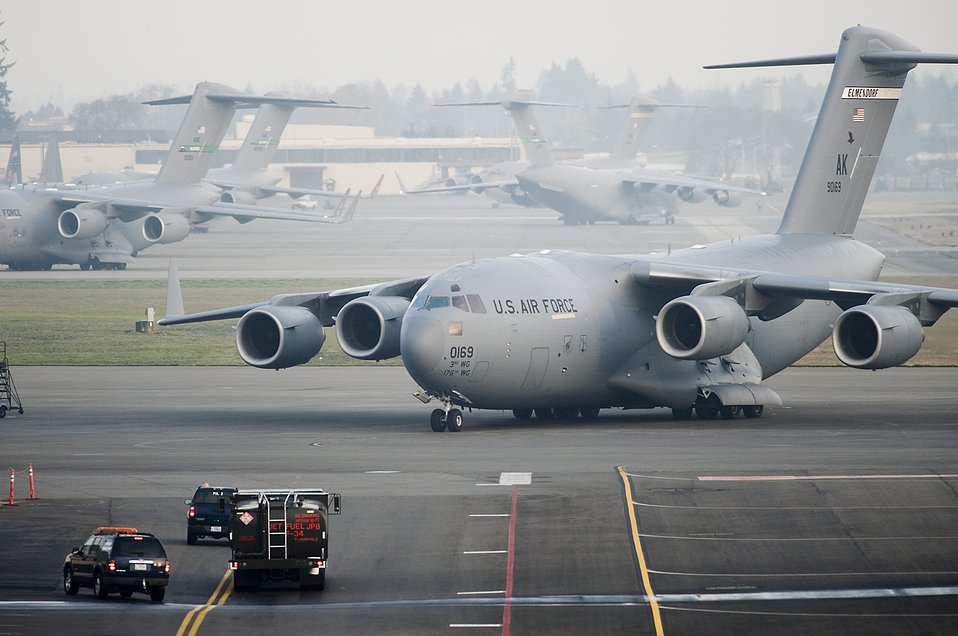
McChord receives Alaska-based Airmen, aircraft as precaution to volcano

A C-17 Globemaster III, like this one, and other aircraft are being moved from Elmendorf Air Force Base, Alaska, to McChord AFB, Wash., due to increased volcanic activity from Mount Redoubt a volcano located approximately 100-miles southwest of Elmendorf AFB.